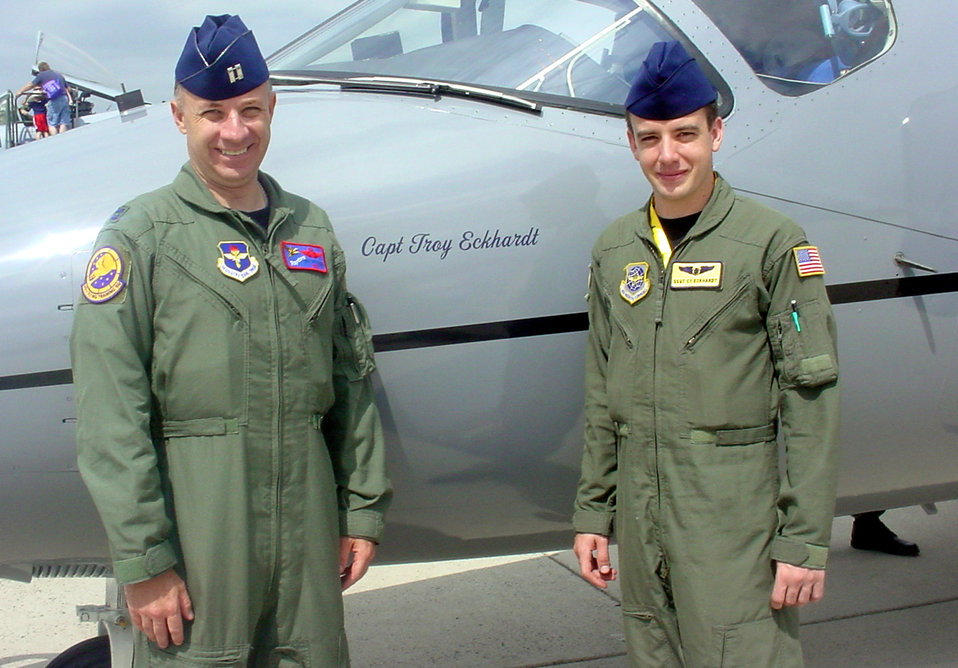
Father and son meet up at open house

GRAND FORKS AIR FORCE BASE, N.D. -- Capt. Troy Eckhardt and his son, Staff Sgt. Cy Eckhardt, stand next to a T-1 during a recent open house here. Sergeant Eckhardt is a boom operator with the base's 906th Air Refueling Squadron, and Captain Eckhardt is a T-1 Jayhawk pilot with the 99th Flying Training Squadron at Randolph Air Force Base, Texas.